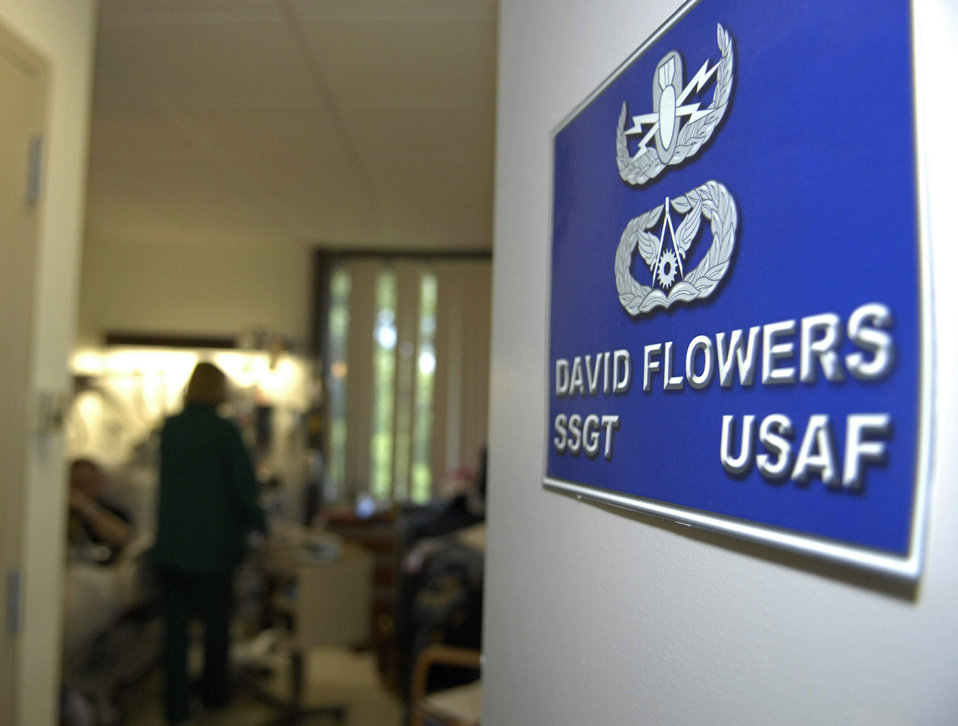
Wounded EOD technician has big plans

Staff Sgt. David Flowers was injured May 11 when he stepped on an antipersonnel mine near Bagram Airfield, Afghanistan. Sergeant Flowers is currently being treated for his injuries at Walter Reed Army Medical Center in Washington, D.C. Sergeant Flowers is an explosive ordnance disposal technician.